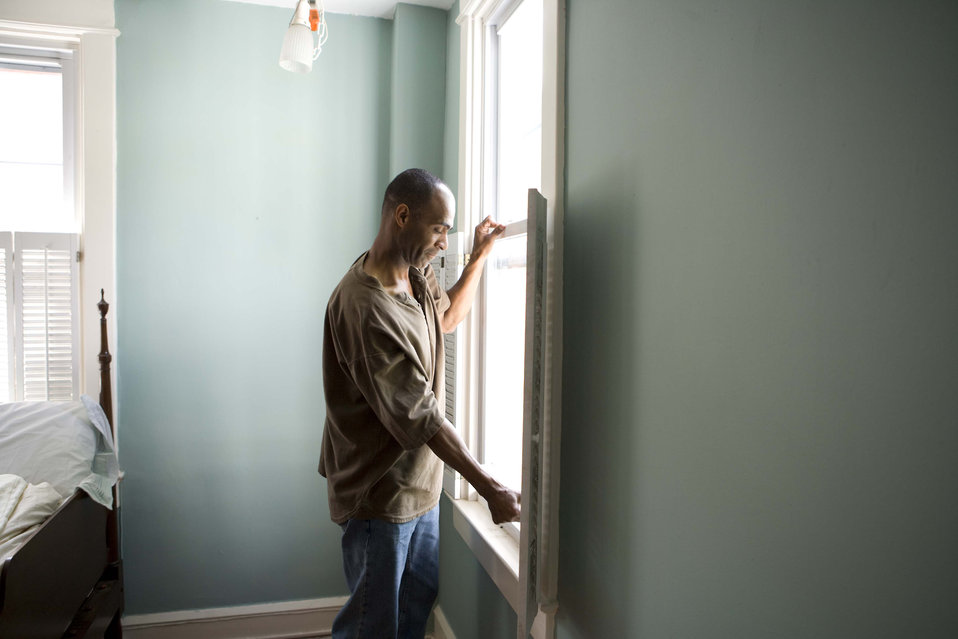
When renovating a home, you should use a damp sponge or cloth to clean dust collected on a window sill, as the dust may contain asbestos or lead-based paint. Home maintenance is an ongoing process for any homeowner, and here we see an African-American man as he was preparing a window in his home for a general cleaning.